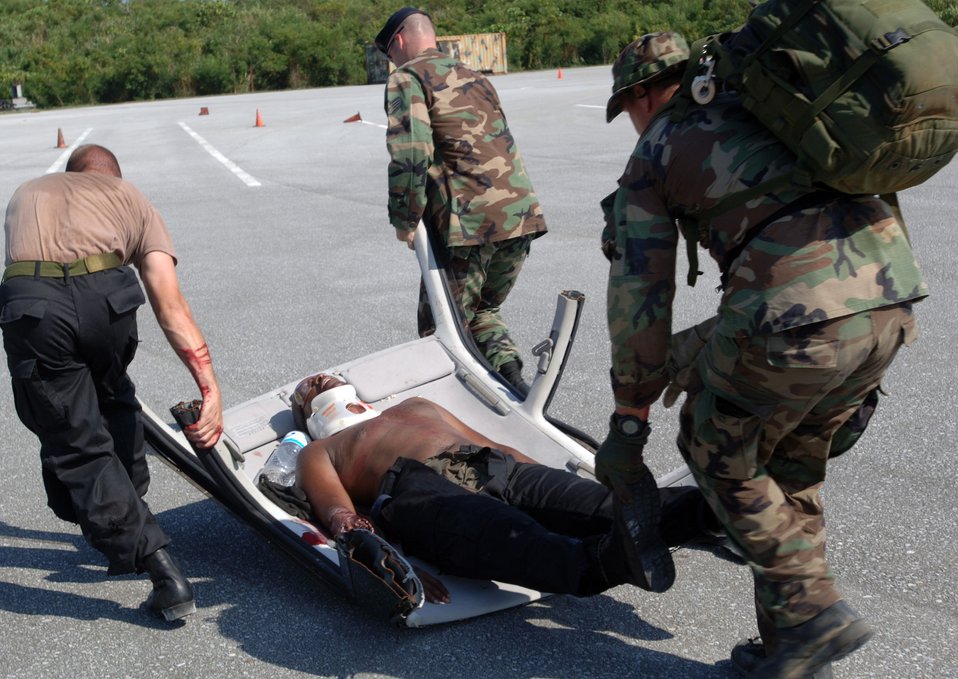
To the rescue

KADENA AIR BASE, Japan -- (From left) Staff Sgt. Charles Bouck, Tech. Sgt. Keith Hartman and Senior Airman Jonathan Courtney evacuate Tech. Sgt. Handel Stewart during a situational medical exercise here. During training, pararescuemen